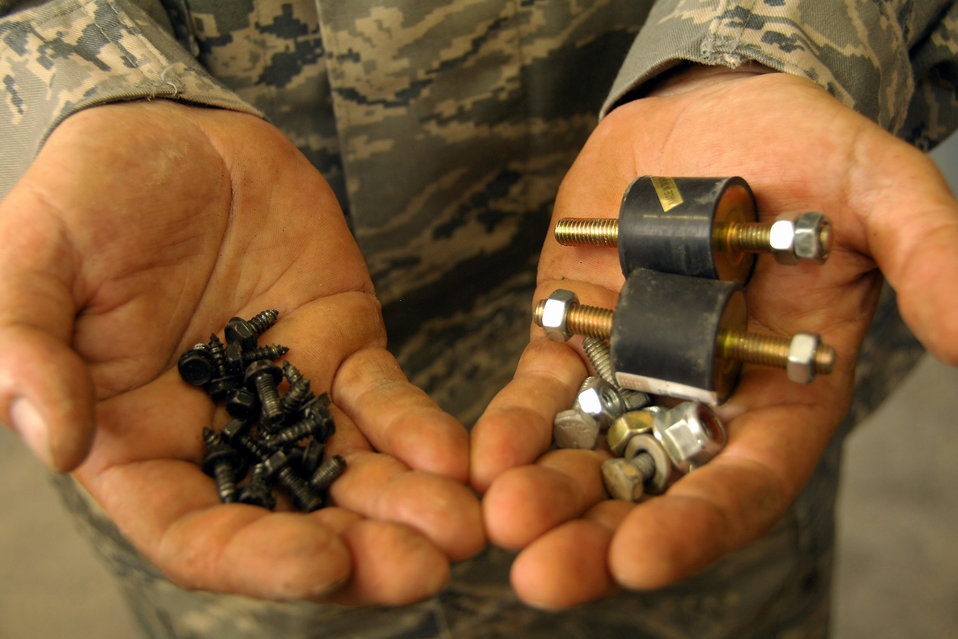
Humvee Modification

Tech. Sgt. Paul Gardner displays the original mounting hardware, left, and the new parts he used to modify an air-conditioning fan and condenser in a Humvee July 21 at a base in Southwest Asia. Sergeant Gardner is credited with the idea of modifying the unit because the Humvees were being brought in continuously for air-conditioning maintenance. He created a specially made L-shaped bracket for the assembly and replaced smaller mounting nut and bolt hardware with larger sizes. Sergeant Gardner is assigned to the 386th Expeditionary Logistics Readiness Squadron, and is deployed from the Mississippi Air National Guard.